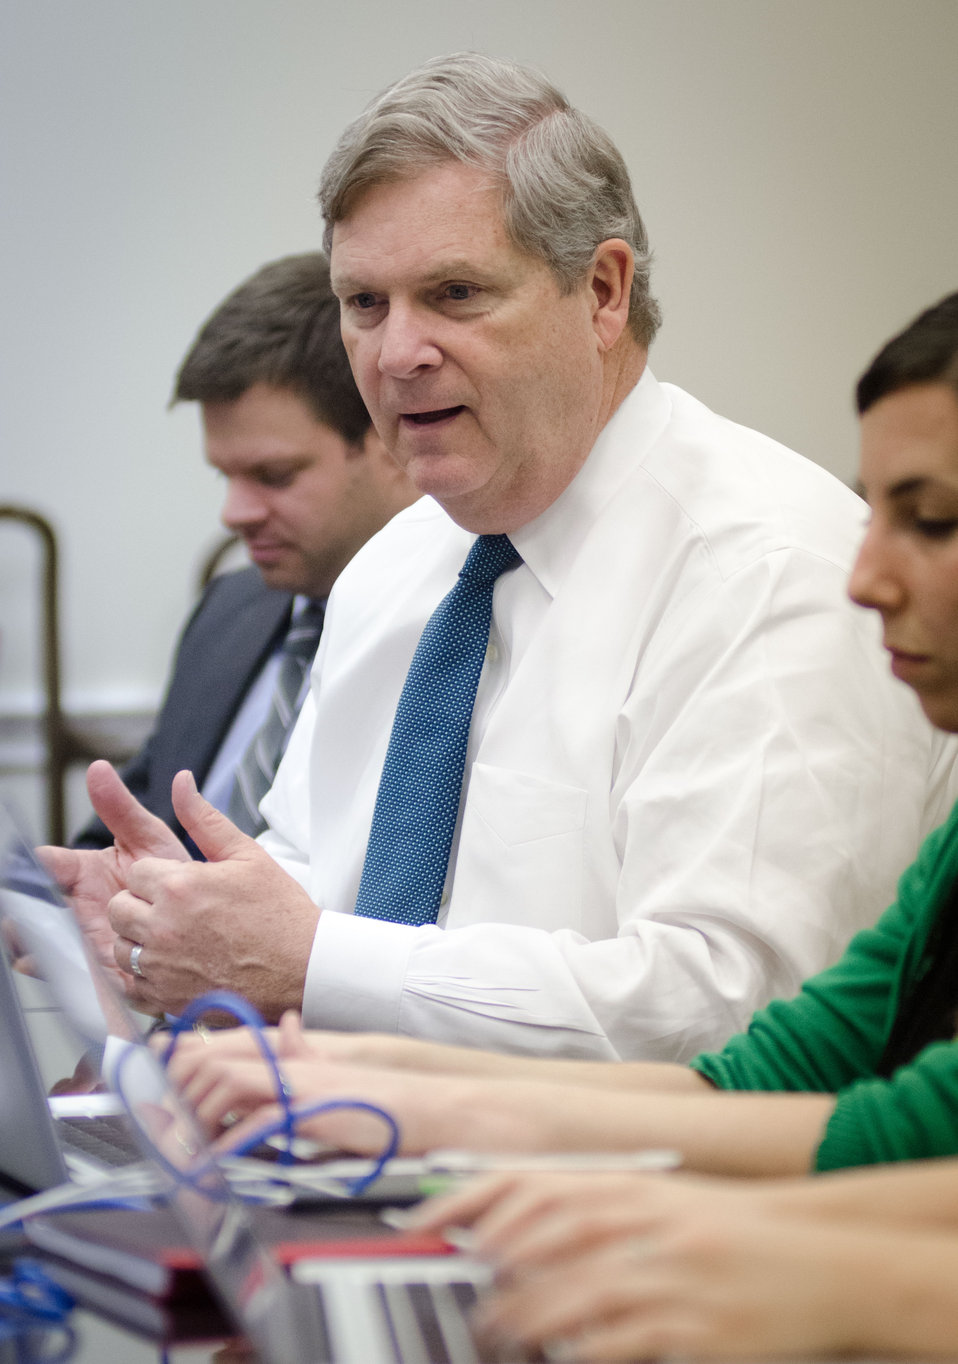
Agriculture Secretary Tom Vilsack (center) composes an Twitter message, that will be posted by New Media Content Specialist Rebecca Frank (right) during his live and online Virtual Office Hours Twitter session, in Washington, D.C. on, Monday, December, 17, 2012. Agriculture Deputy Administrator Farm Service Agency Brandon Willis, left, studies various incoming questions and provides input. Online questions about the important role of rural America to the national and global economy, increasing agricultural opportunities in U.S. communities, and the importance of passing a five-year Farm Bill are addressed during this live Twitter chat. Some of the responses address food and nutrition, agricultural research, urban agriculture, bio-based products and how rural communities can get more involved in rural policy, to name a few. Questions were submitted live and in advance to the @USDA Twitter account using the hashtag #AskUSDA.